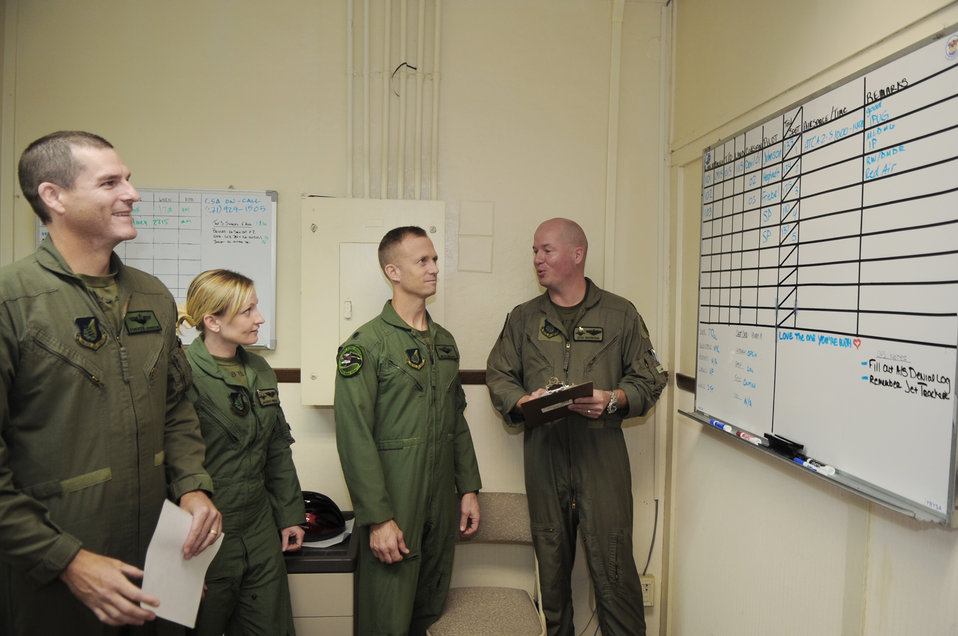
Reservists integrate with active duty for theater security

Lt. Col. Mark Snowden (right), gives a pre-flight briefing to (left to right) Maj. Clay Johnson, Capt. Elizabeth Friebel and Lt. Col. Hubie Hegtvedt Aug. 7 at Andersen Air Force Base, Guam. The pilots are deployed here to support U.S. Pacific Command's theater security package mission in the Asia-Pacific region. Colonel Snowden is the 525th Expeditionary Fighter Squadron assistant director of operations. Major Johnson is the 302nd Fighter Squadron chief of training. Captain Friebel is the 525th EFS chief of training. Colonel Hegtvedt is the 302nd Fighter Squadron commander.